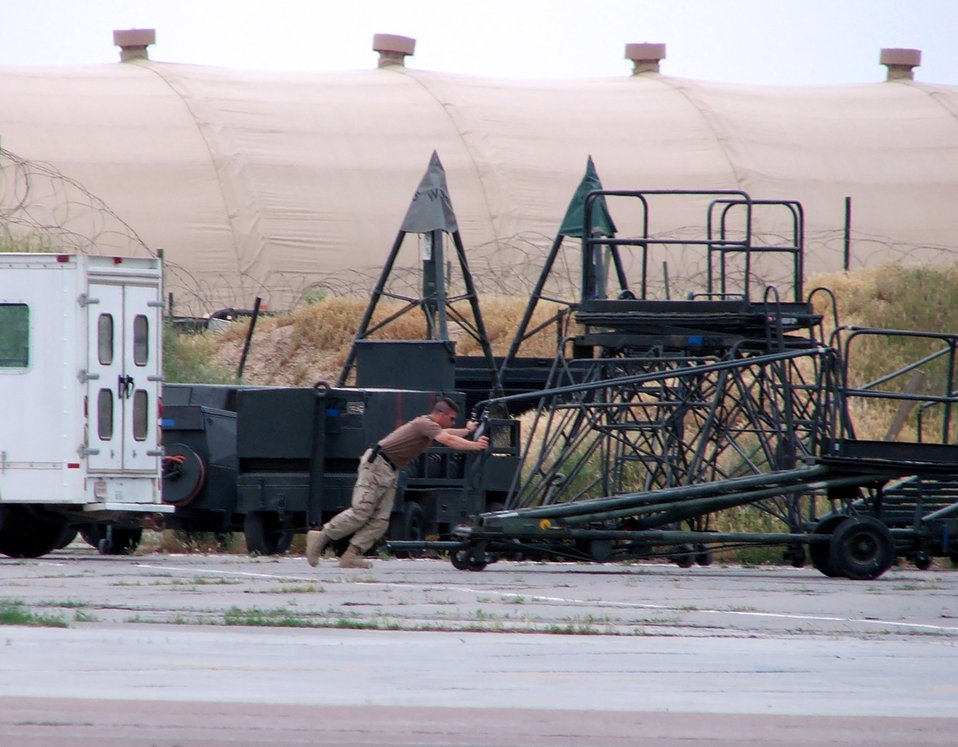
Transient alert Airmen handle diverse role

KARSHI-KHANABAD AIR BASE, Uzbekistan -- Staff Sgt. Brian Fentress moves a maintenance stand here May 2. He is a transient alert Airman and aerospace ground equipment technician with the 416th Air Expeditionary Group's transient alert flight. He is deployed from Elmendorf Air Force Base, Alaska.